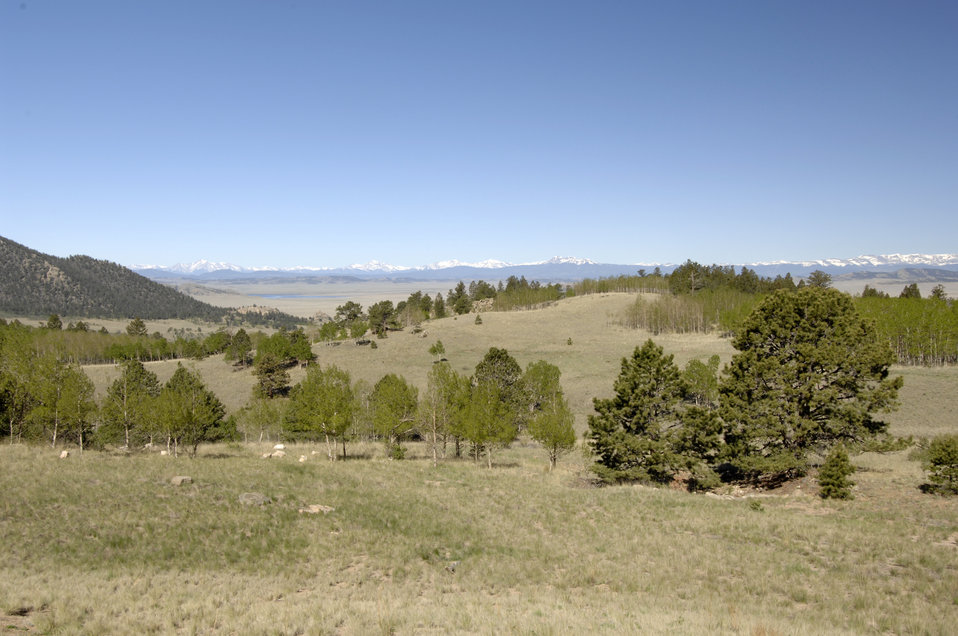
The San Isabel and Gunnison National Forests in Colorado on June 12, 2012.